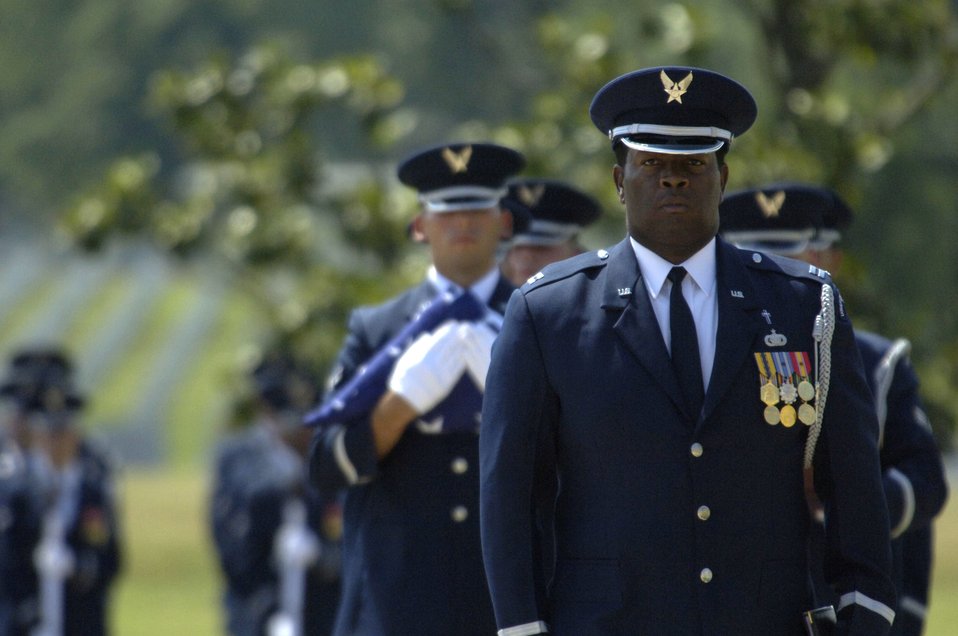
Chaplains provide honored service

Chaplain (Capt.) Richard Black is one of three Air Force chaplains assigned to Arlington National Cemetery to preside over funerals for Air Force members to be buried there. Each of the services has chaplains assigned and collectively, they conduct an average of 27 funerals a day.